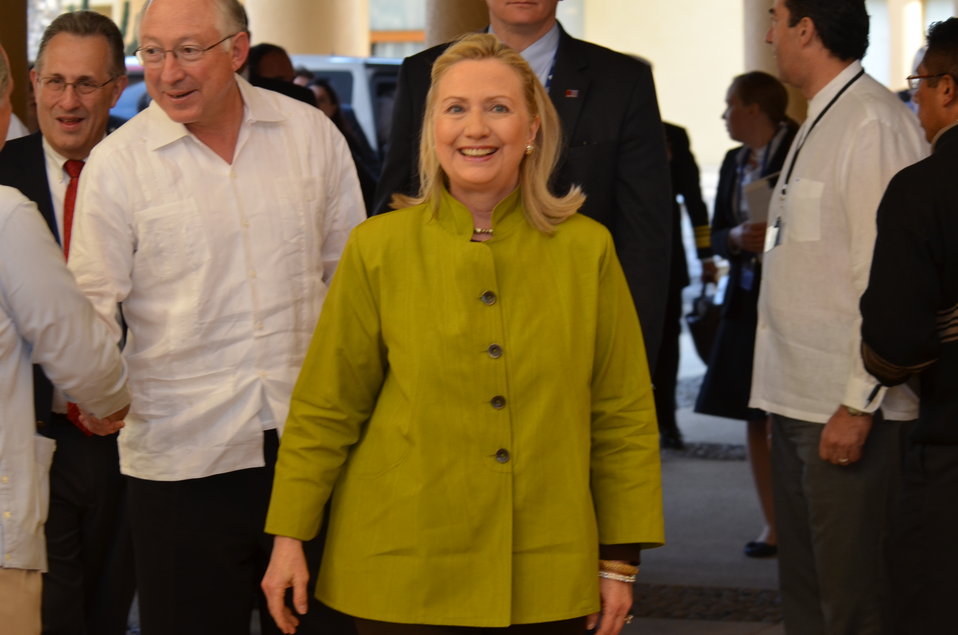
Secretary Clinton at Signing Ceremony for U.S.-Mexico Transboundary Hydrocarbons Agreement

U.S. Secretary of State Hillary Rodham Clinton and U.S. Secretary of the Interior Ken Salazar arrive for the U.S.-Mexico Transboundary Hydrocarbons Agreement in Los Cabos, Mexico, February 20, 2012.